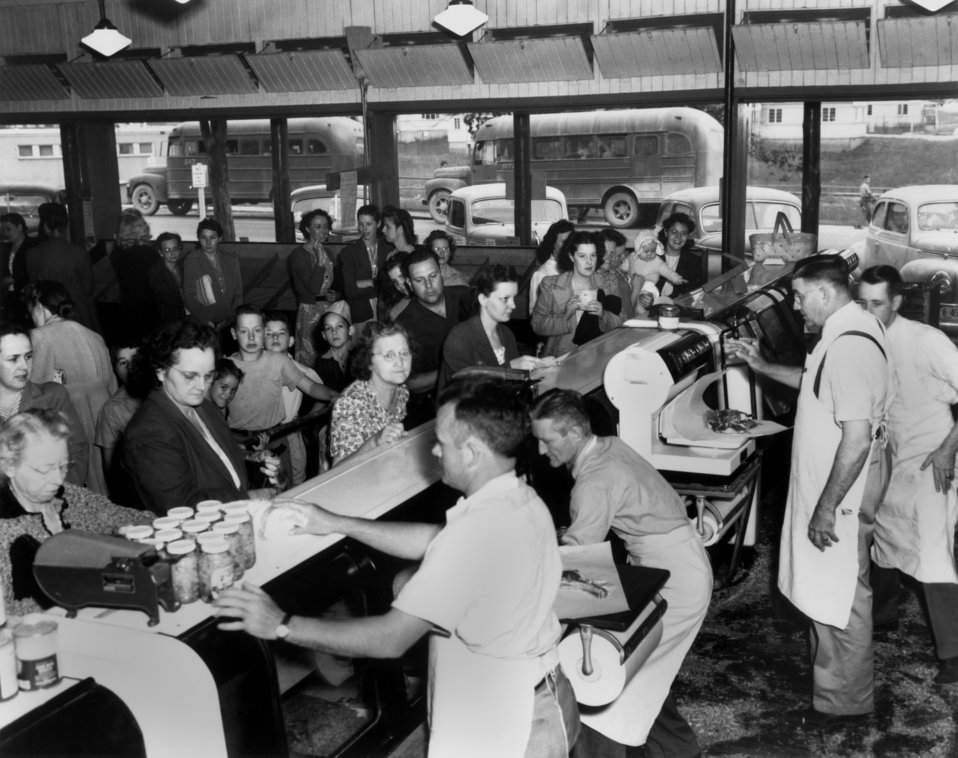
City Market Meat Counter Oak Ridge

661-1 DOE photo by Ed Westcott
City Market Meat Counter Oak Ridge Tennessee 6-6-1945